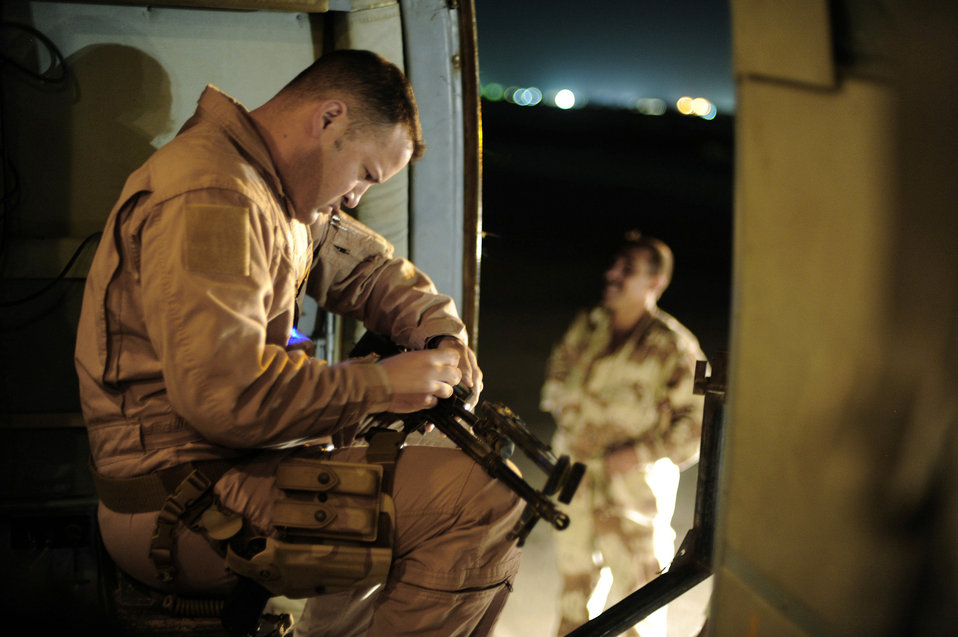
Airmen assist Iraqis with gunner training

Tech. Sgt. Onnez Rodriquez-Massas inspects a PKM machine gun on an Iraqi Mi-171 helicopter prior to a night mission July 12 at Camp Taji, Iraq. The 721st AEAS trains the Iraqi air force in many functions, including helicopter pilot training and aerial gunner training. Sergeant Rodriguez-Massas is an aerial gunner assigned to the 721st Air Expeditionary Advisor Squadron and is deployed from Andrews Air Force Base, Md.